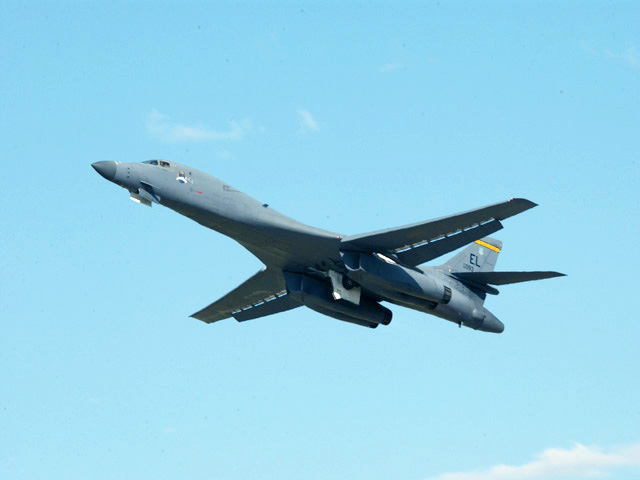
Lancer operations

A B-1 Lancer from the 28th Bomb Wing takes off from Ellsworth Air Force Base, S.D., on Tuesday, June 27, during an operational readiness exercise. The B-1 is loaded with dummy bombs during the exercise.